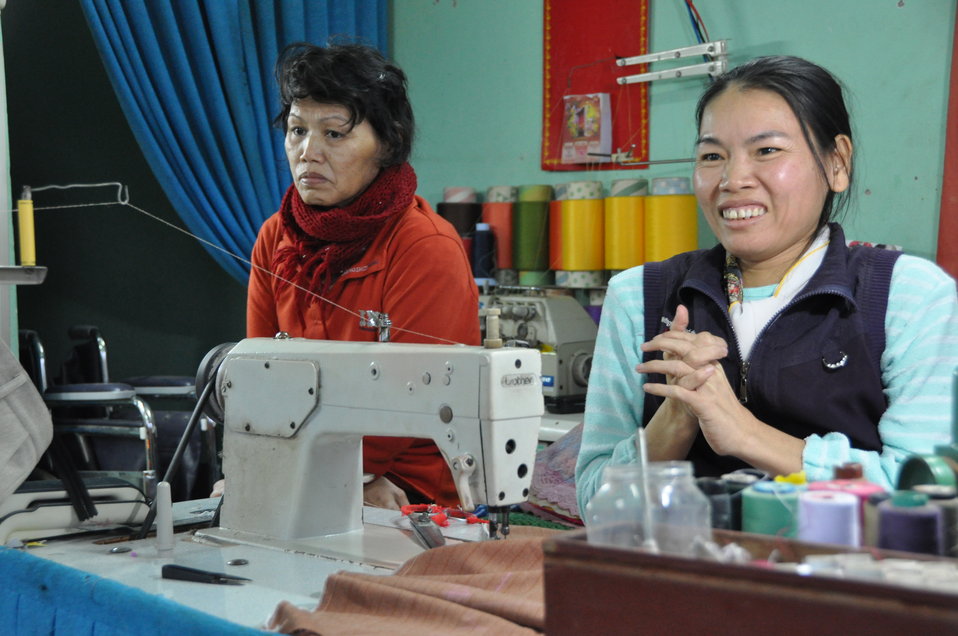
Le Thi Het receives support to boost her income from sewing.

Ms. Le Thi Het received a USAID funded wheelchair and regular physical therapy services as part of a three-year project in Danang.